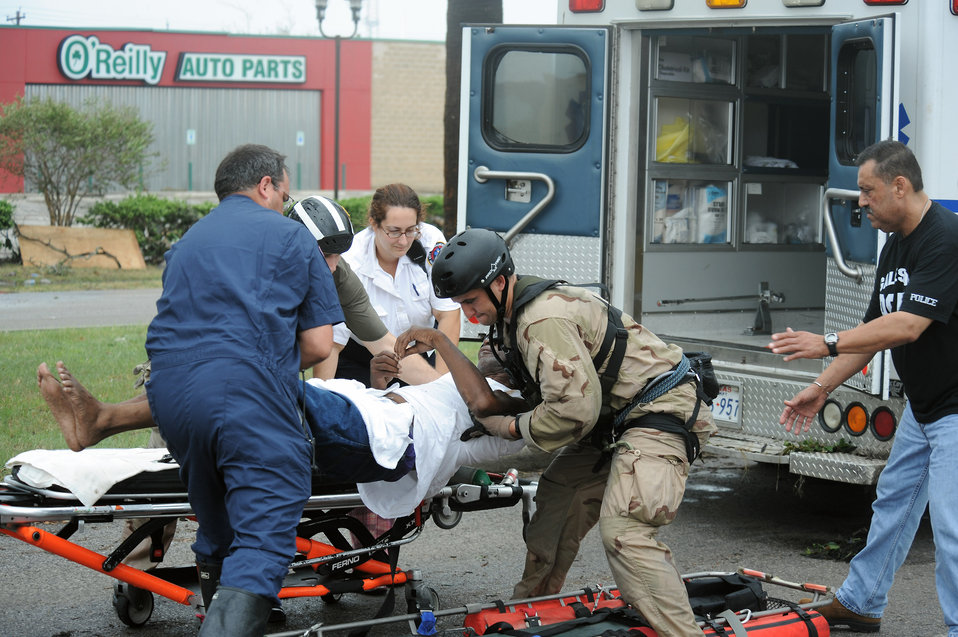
Airmen conduct search, rescue

Staff Sgt. Lopaka Mounts crossloads a patient to a litter during search and rescue operations in Galveston, Texas, after Hurricane Ike, Sept. 13. Sergeant Mounts is a pararescueman assigned to the 331st Air Expeditionary Group at Randolph Air Force Base, Texas.